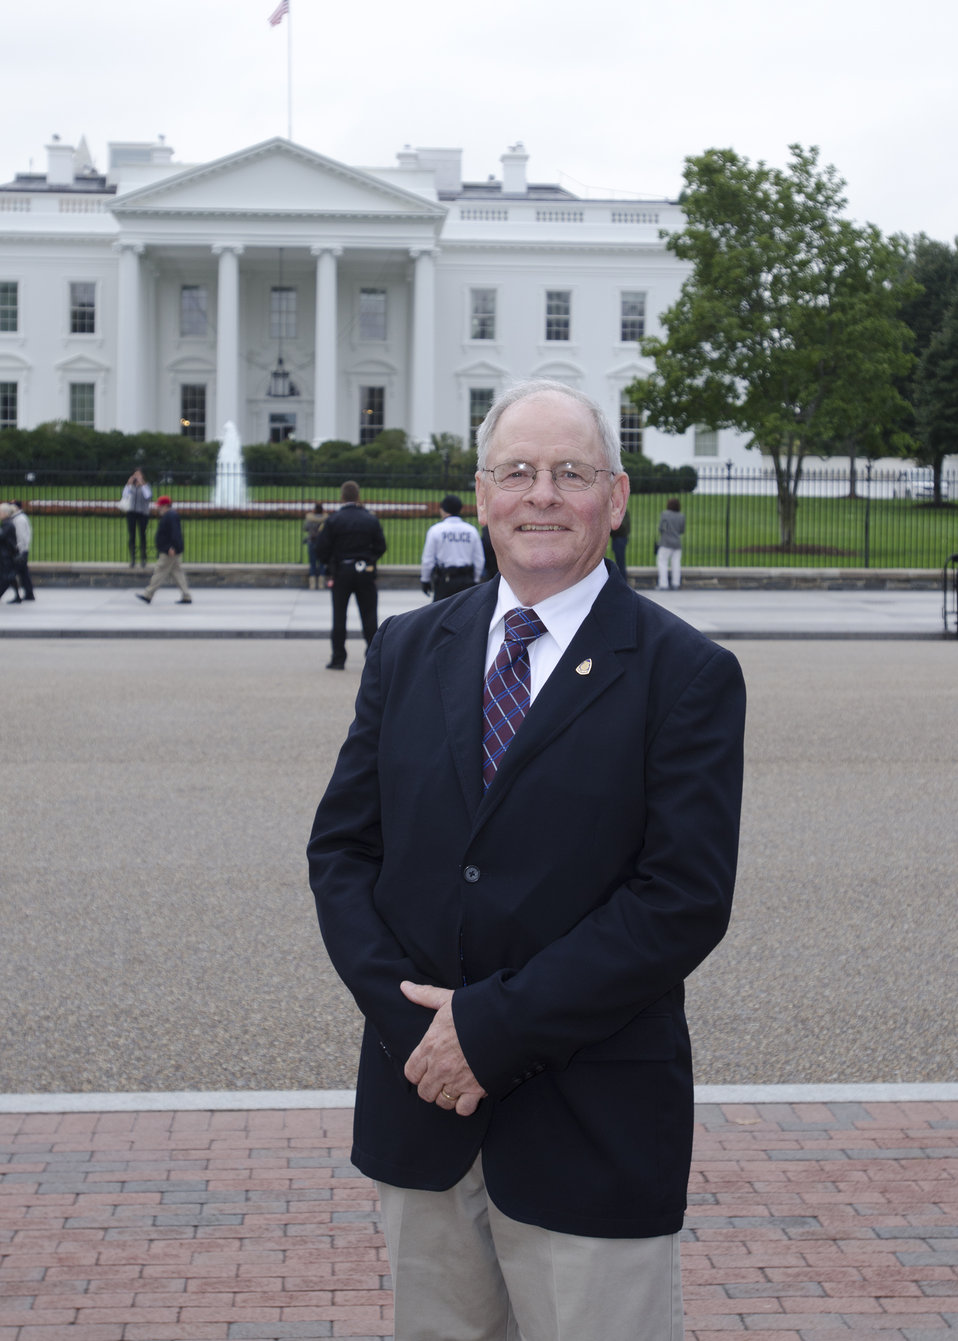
Champion of Change recipient Bill Jimmerson in front of the White House in Washington, D.C. on Tuesday, Oct. 9, 2012. Jimmerson is a retired educator who for 32 years served as a Agricultural Education teacher and FFA Advisor in Montana. During his seven years as Montana State FFA Advisor, he created the Montana FFA American Indian program to provide Native American students with opportunities to become involved in FFA and to share their culture with others in the organization. He is passionate about providing leadership opportunities to the next generation of citizens.